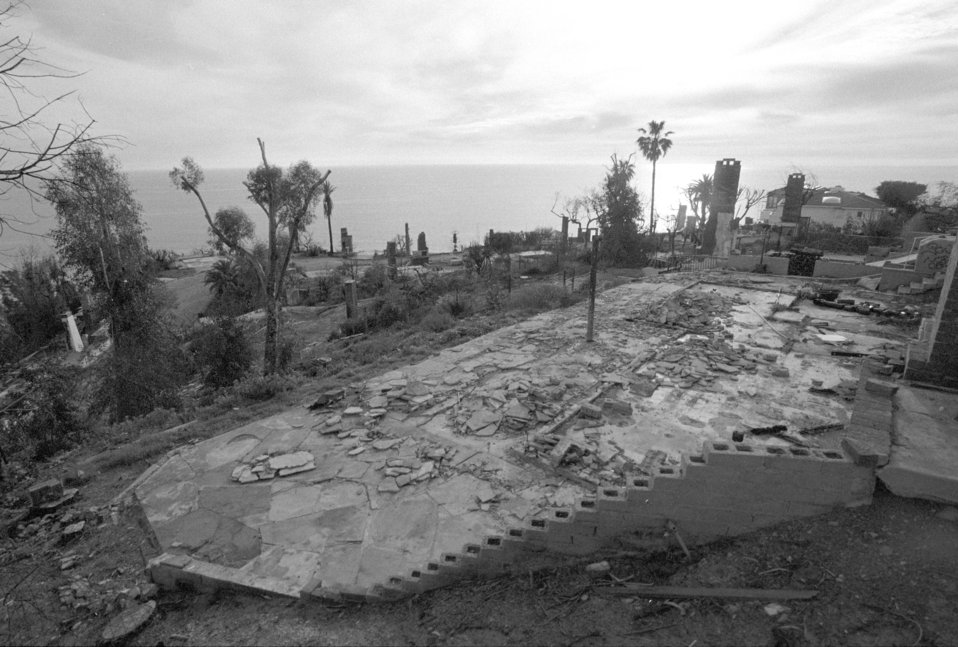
Torrential rains from El Nino created mudslides that destroyed homes along the Southern California coast on January 23, 1995.